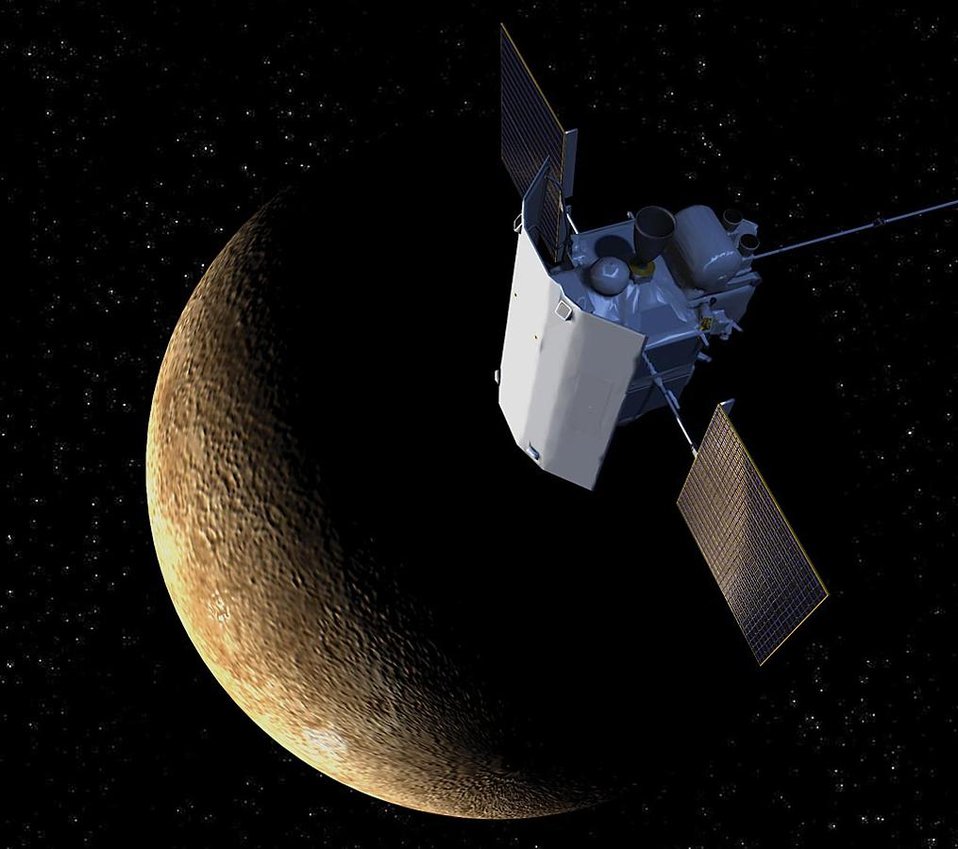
ARTIST'S CONCEPT OF THE MERCURY MESSENGER SPACECRAFT.

A TEAM OF SCIENTISTS AND ENGINEERS FROM DOE'S LAWRENCE LIVERMORE NATIONAL LABORATORY (LLNL) IN COLLABORATION WITH THE UNIVERSITY OF CALIFORNIA AT BERKELEY AND JOHNS HOPKINS APPLIED PHYSICS LABORATORY, DESIGNED AND BUILT THE HIGH RESOLUTION GAMMA RAY DETECTOR THAT WILL ENABLE THE MERCURY MESSENGER SPACECRAFT TO MEASURE THE ELEMENTAL COMPOSITION OF MERCURY'S CRUST. A TRIP TO THE PLANET WAS LAUNCHED ON AUGUST 3, 2004. LLNL'S ROLE WAS CRITICAL IN ENSURING THE SPACECRAFT'S GAMMA-RAY SPECTROMETER COULD WITHSTAND THE HEAT OF MERCURY.